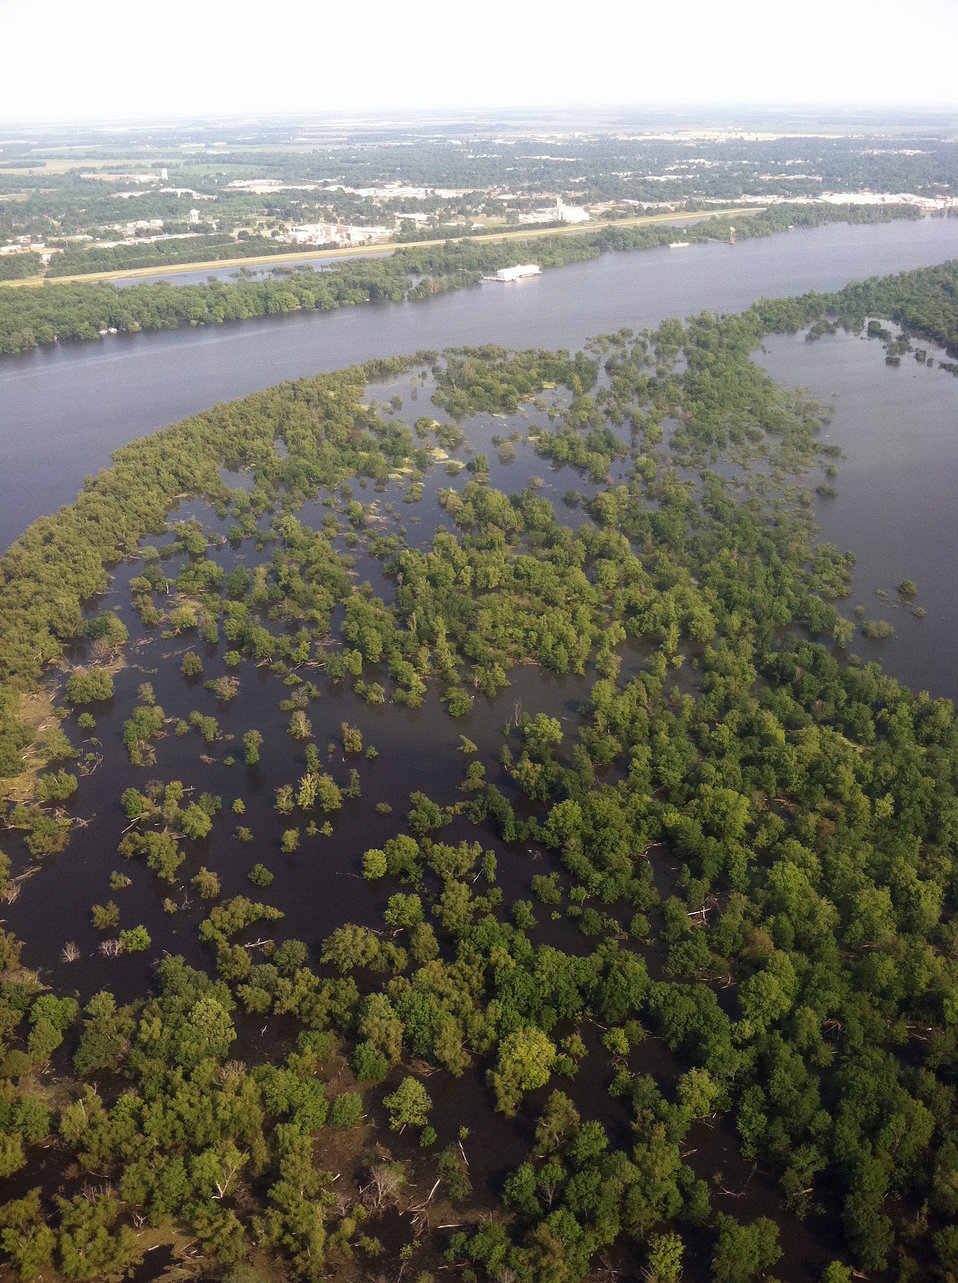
Aerial view on the flooding on the Mississipi River, on Thursday, May 19, 2011 from the MS side.